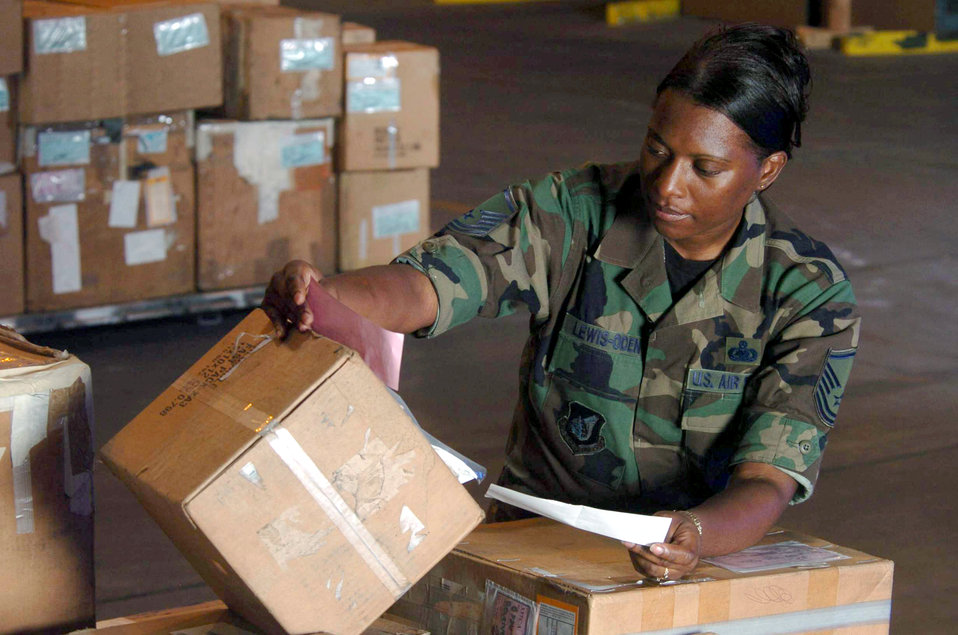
Inventory management

YOKOTA AIR BASE, Japan -- Master Sgt. Sonia Lewis-Oden verifies the stock numbers of equipment at the aircraft parts facility here. She is superintendent of the 374th Logistics Readiness Squadron's aircraft parts store element here.